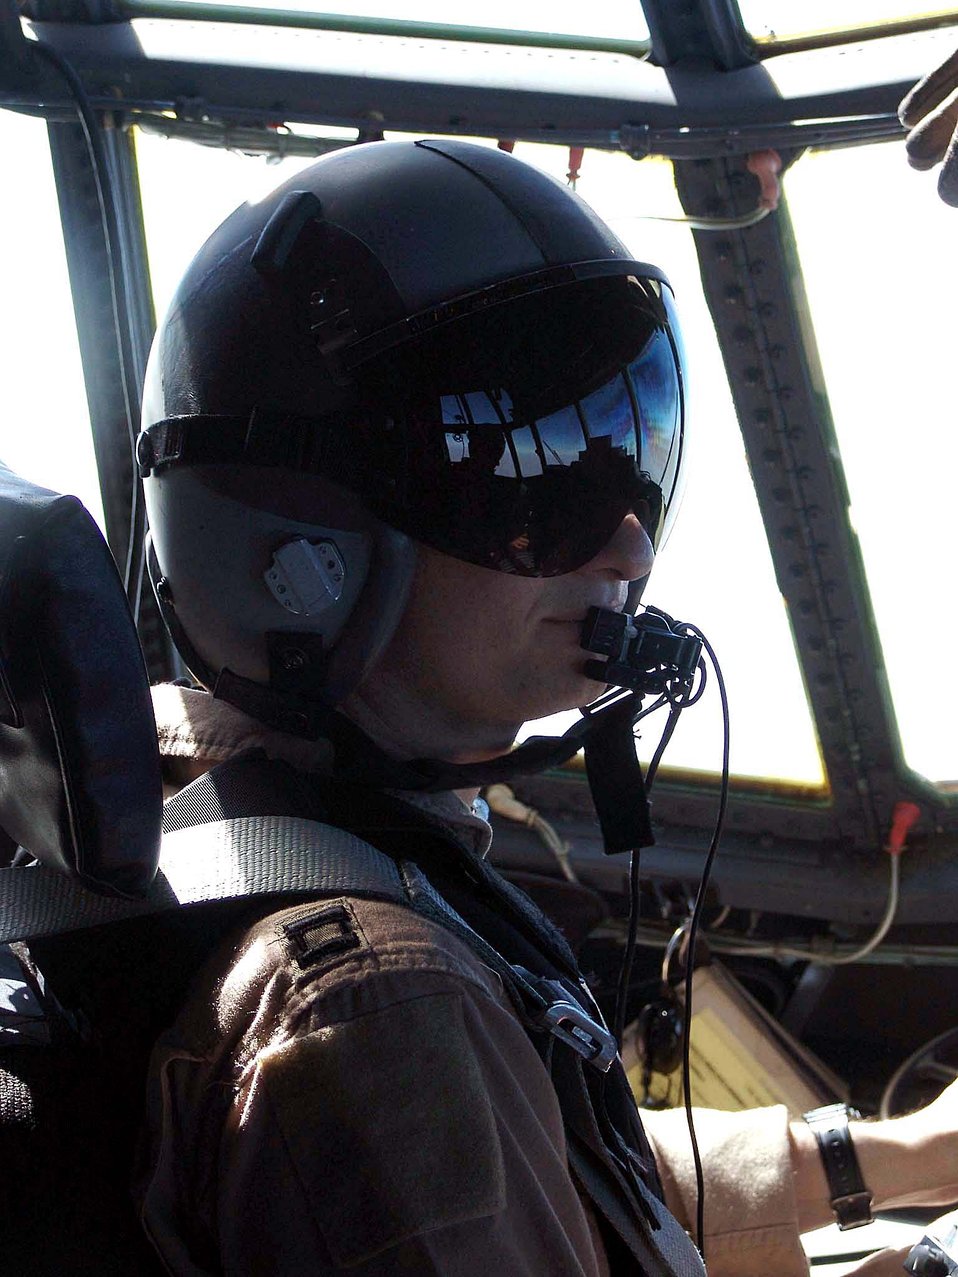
Gettin' ready

SOUTHWEST ASIA -- The sky of Iraq reflects in Capt. Josh Rieder's visor during a flight Oct. 18. He is a C-130 Hercules pilot with the 746th Expeditionary Airlift Squadron at a forward-deployed location and is from the 41st Airlift Squadron at Pope Air Force Base, N.C.